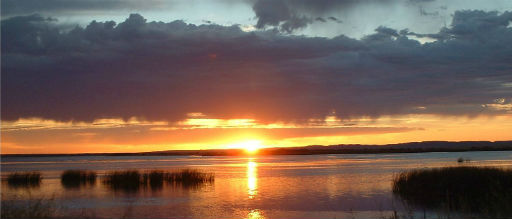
Sunrise on Bowdoin NWR